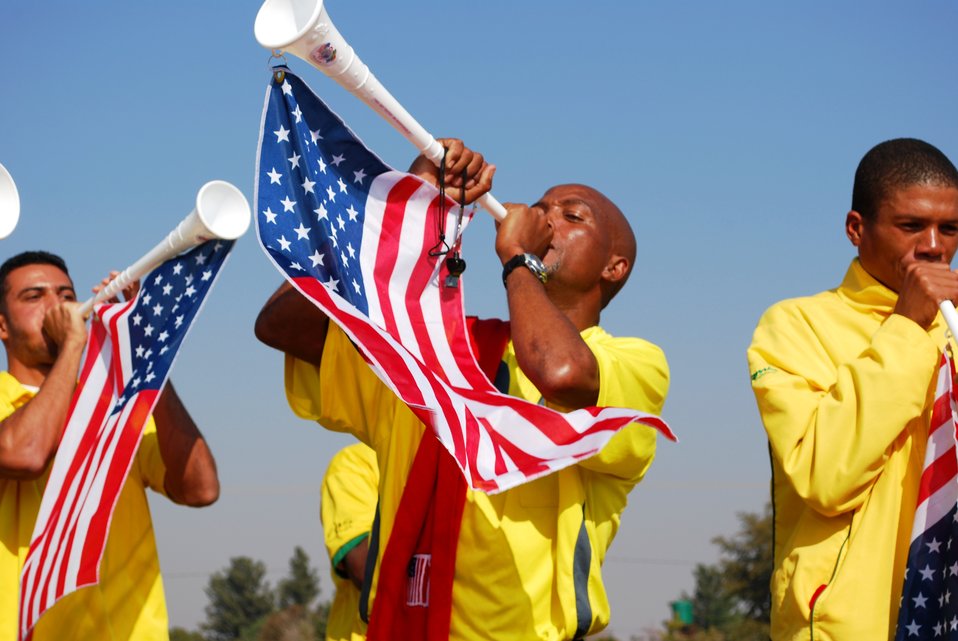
Vuvuzelas Are Played at Youth World Cup Match Preview

Vuvuzelas are played before two Under-11 Bafokeng Football Academy teams preview the FIFA 2010 World Cup match between the United States and Ghana by playing each other as the “U.S.” and Ghana” on June 25, 2010, in Rustenburg, South Africa. The game highlighted the development of rural soccer in South Africa, particularly in the Royal Bafokeng Nation, which consists of twenty-nine villages located in the Rustenburg Valley in the North West Province.